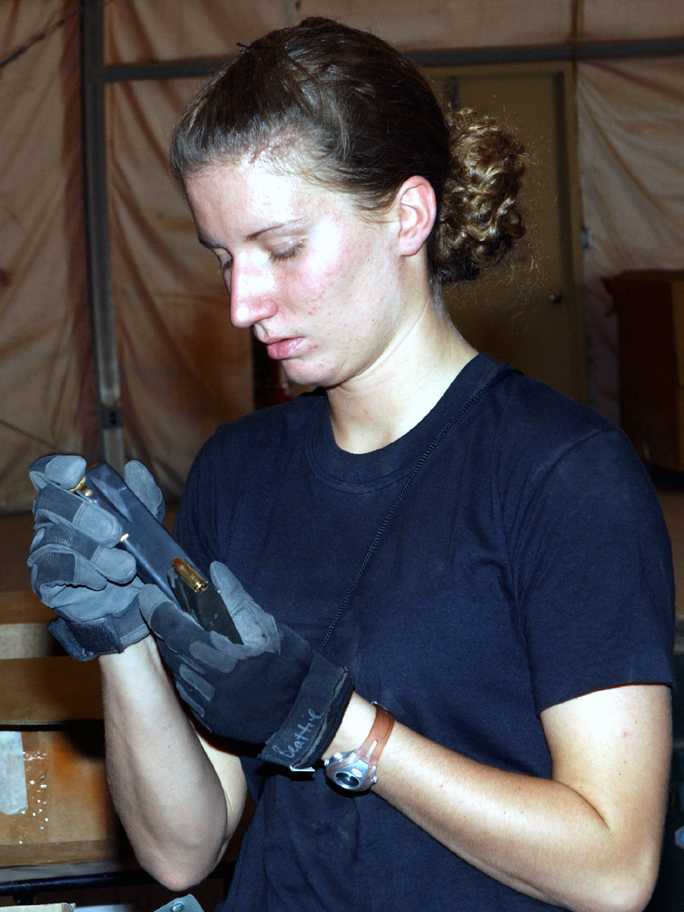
Supply Airmen run mission lifeline at Ali Base

Airman 1st Class Erica Beattie verifies the count of ammunition in a clip during an inventory at Ali Base, Iraq, on Wednesday, June 28. She is a supply technician with the 407th Expeditionary Logistics Readiness Squadron.